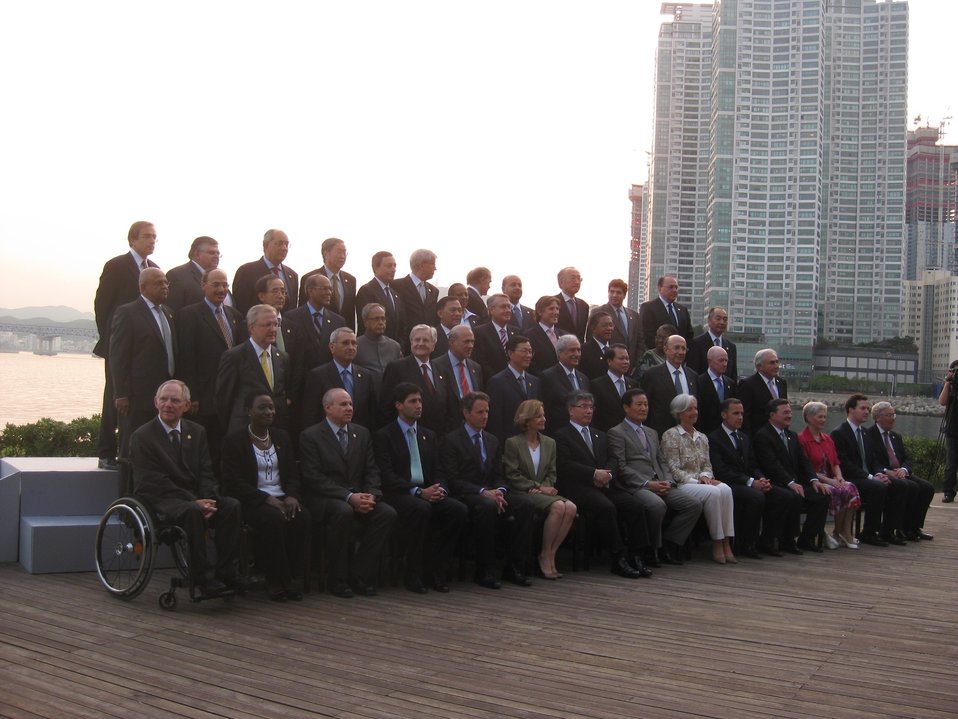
G-20 6/4/10

Secretary Geithner participated in a family photo during the G-20 Conference in Busan, Korea.